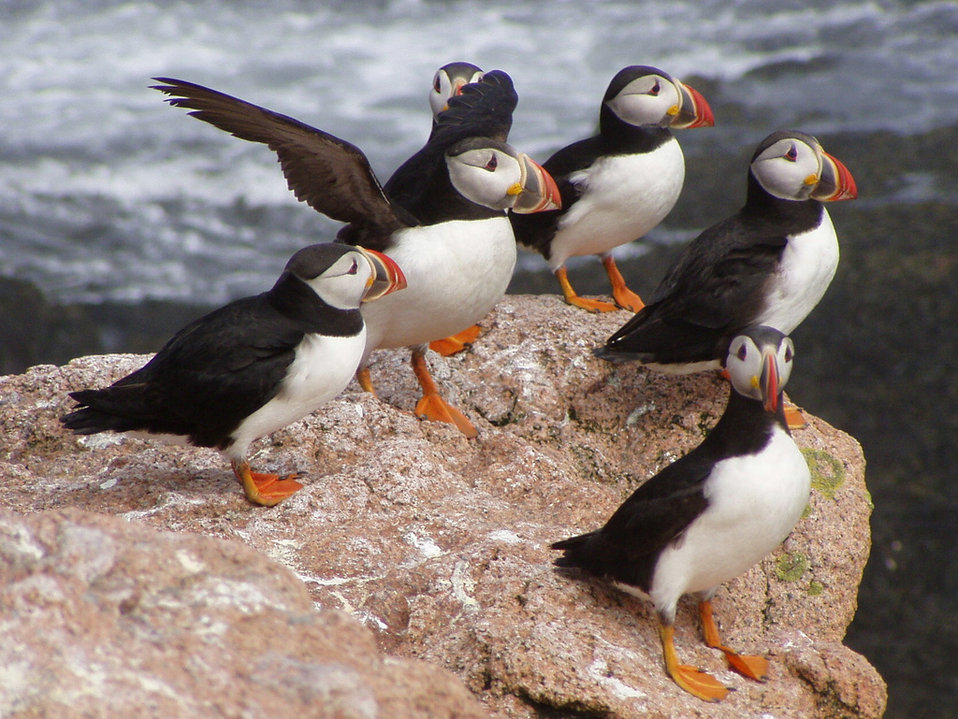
Atlantic puffins

Maine Coastal Islands National Wildlife Refuge/USFWS